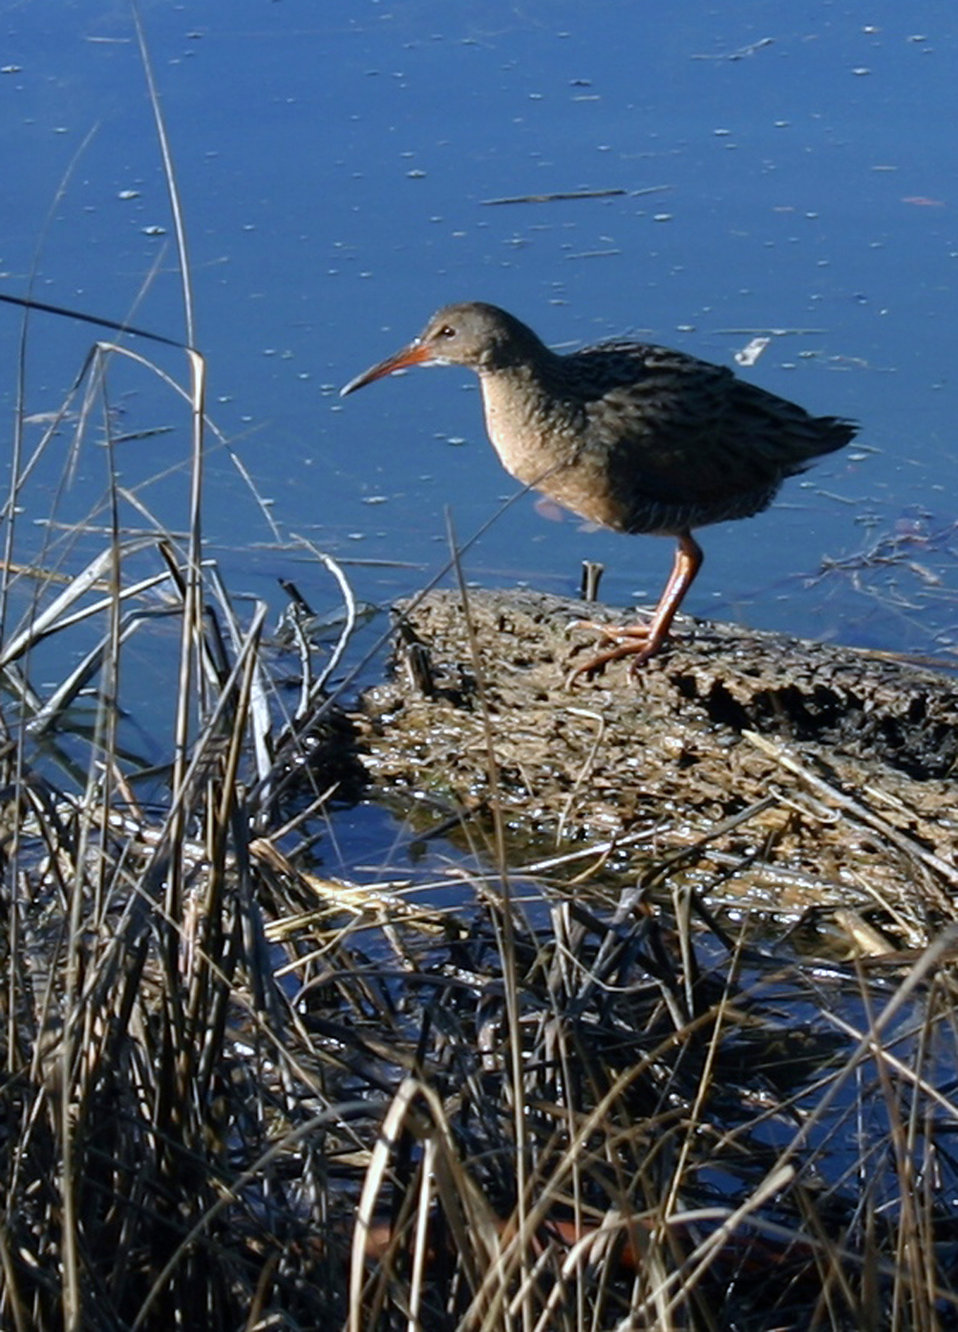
California clapper rail

Endangered California clapper rails are now restricted almost entirely to the marshes of San Francisco estuary, where the only known breeding populations occur. In south San Francisco Bay, there are populations in all of the larger tidal marshes. Andy Raabe/USFWS